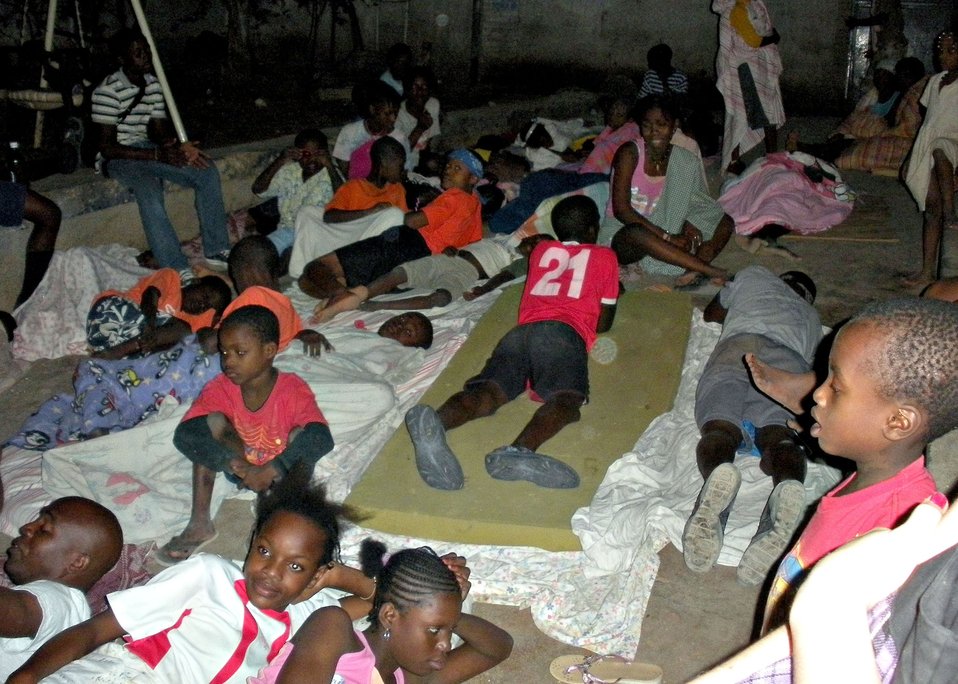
After the quake

Children look for a place to sleep following a devastating earthquake in Port-au-Prince, Haiti. Airman 1st Class Mike Cooksey, 27th Special Operations Equipment Maintenance Squadron, returned to Cannon Air Force Base, N.M., Jan. 17, 2010, from Haiti where he had gone on leave to help a friend who was there on a mission.